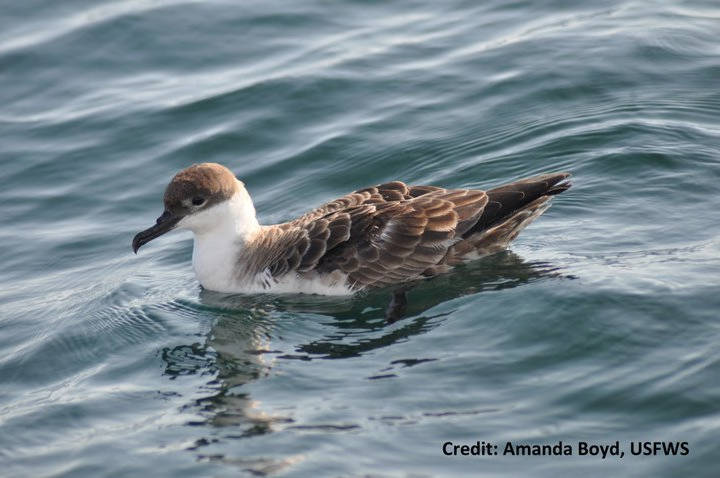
Greater shearwater

Nantucket National Wildlife Refuge/USFWS